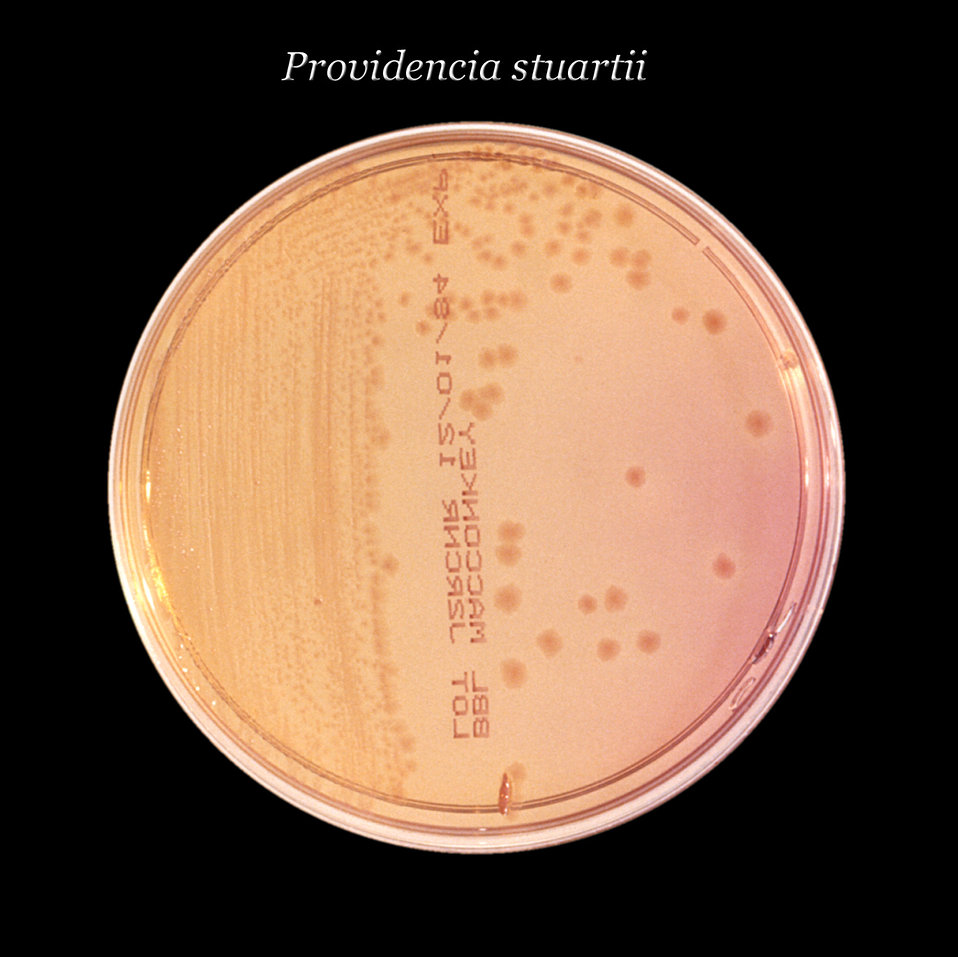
After 24 hours, this inoculated MacConkey agar culture plate cultivated colonial growth of Gram-negative, rod-shaped and facultatively anaerobic Providencia stuartii bacteria.